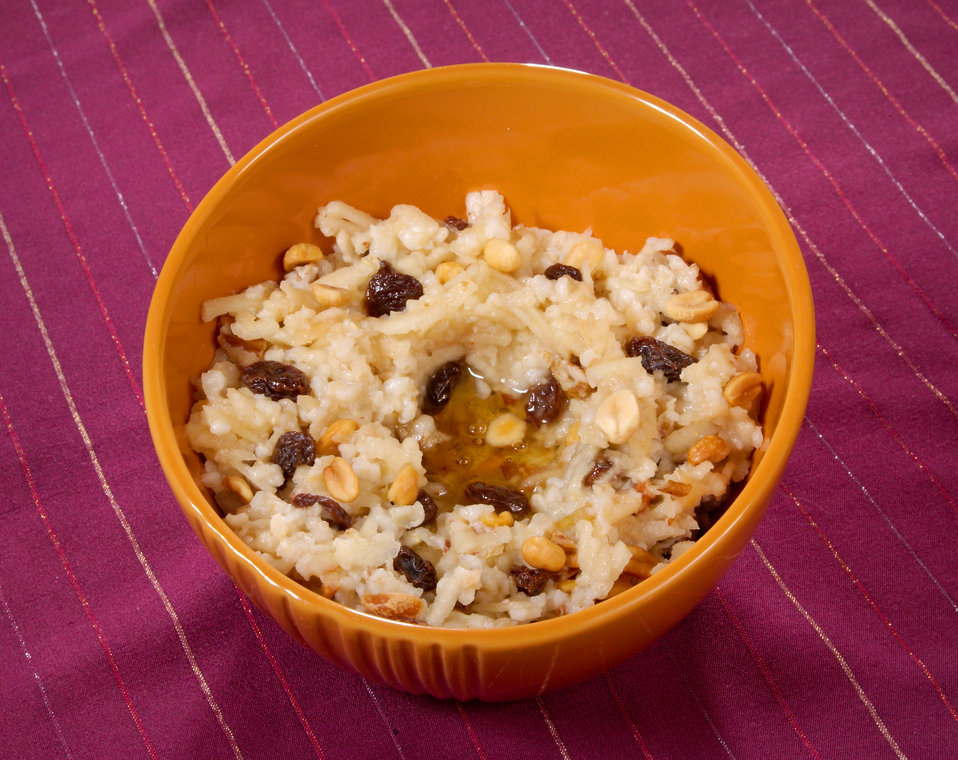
As a side dish, or a quick, simple breakfast, this healthy rice dish is packed with vitamins and minerals. The ingredients include long grain rice, raisins, peanuts, walnuts, brown sugar, and a touch of salt.